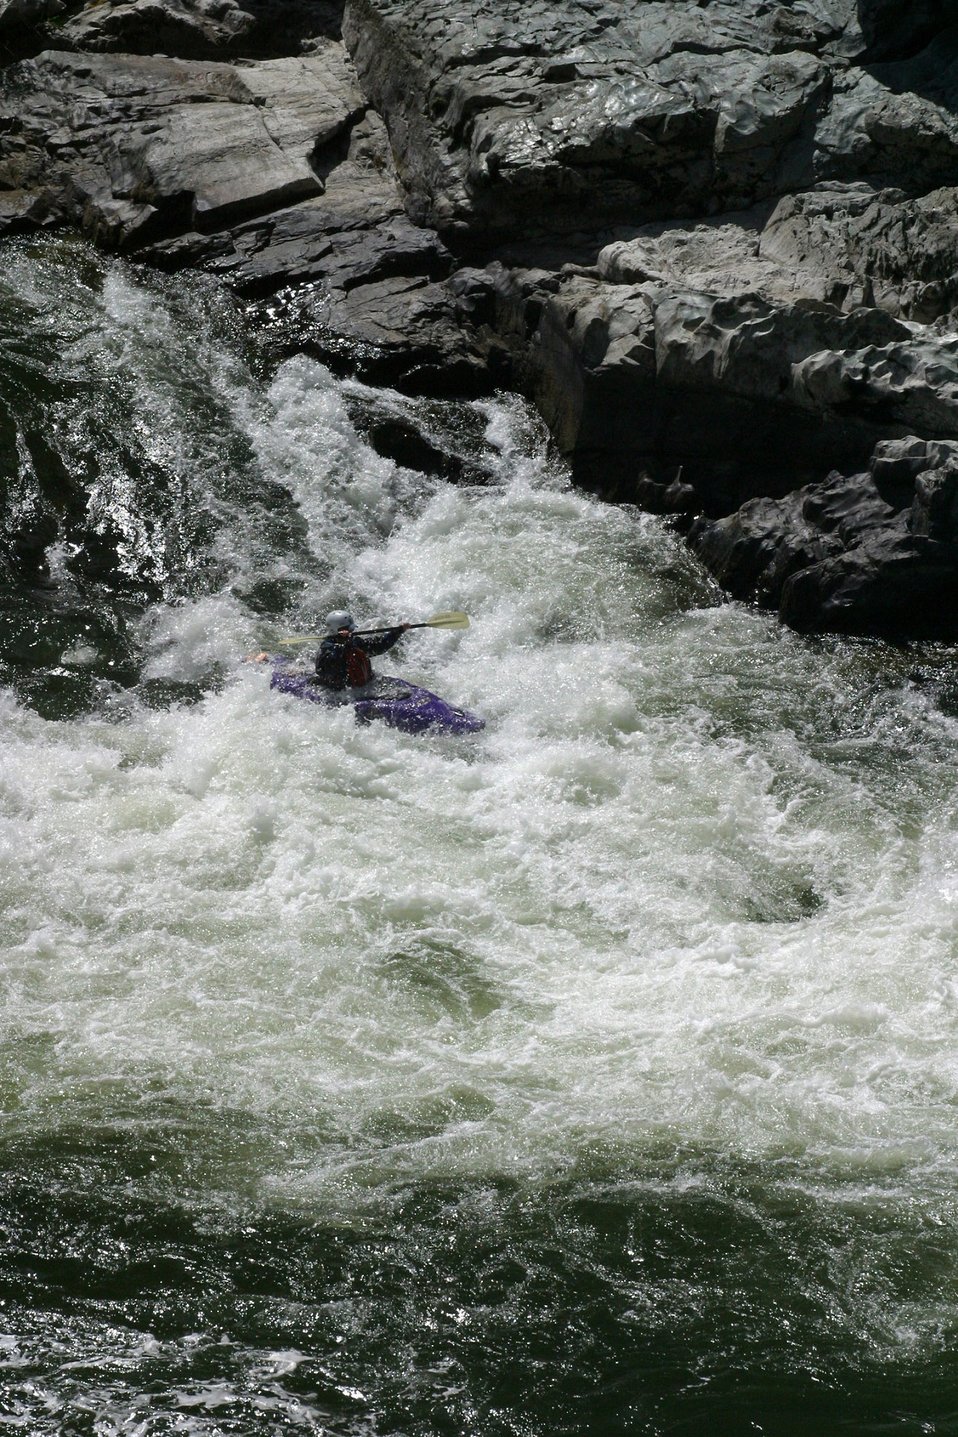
Boater at Grave Creek Falls